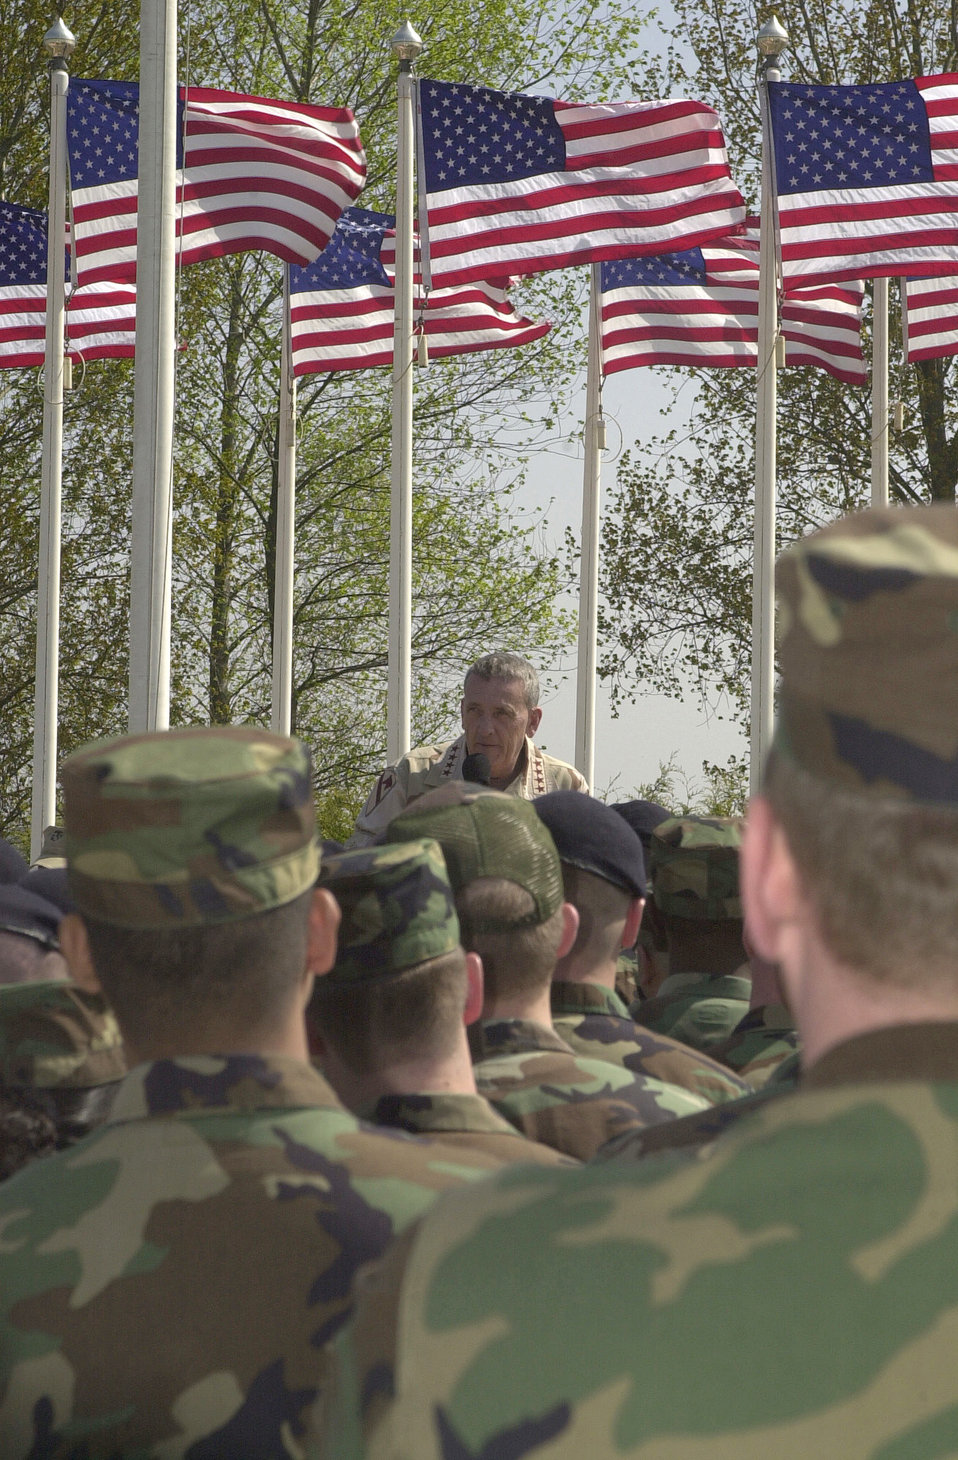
General Tommy Franks speaks to airmen

OPERATION IRAQI FREEDOM -- Army Gen. Tommy Franks, commander of U.S. Central Command, addresses airmen of the 457th Air Expeditionary Group during a visit to a forward-deployed bomber location supporting Operation Enduring Freedom.